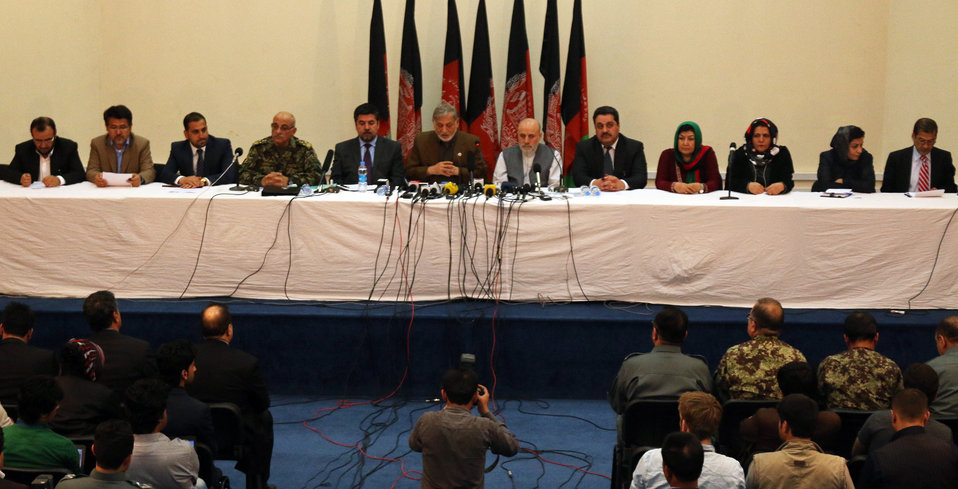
Military and officials from IEC attend a press conference at the end of voting day in Kabul.